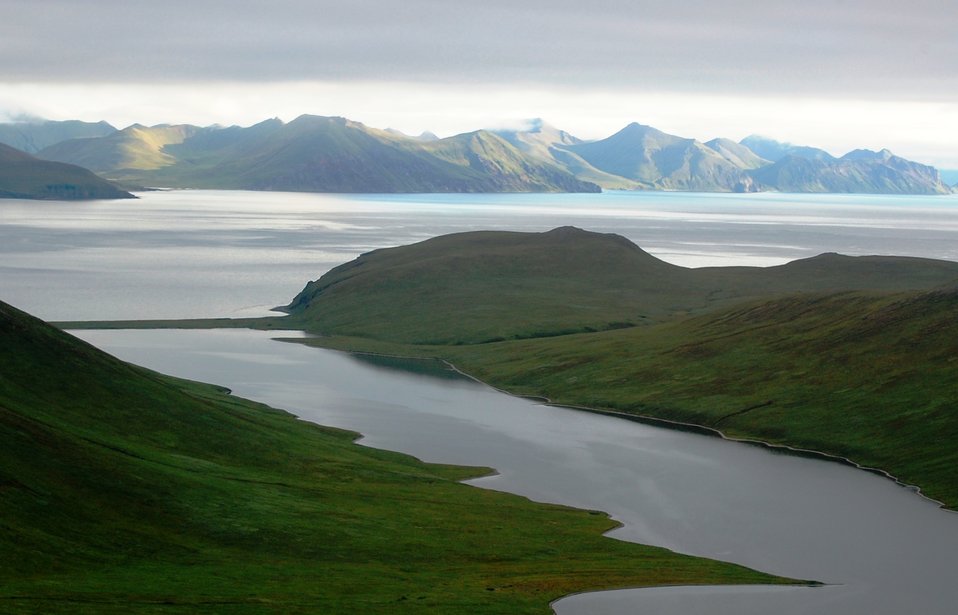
Unimak Landscapes

SE Unimak Island, Alaska Maritime National Wildlife Refuge